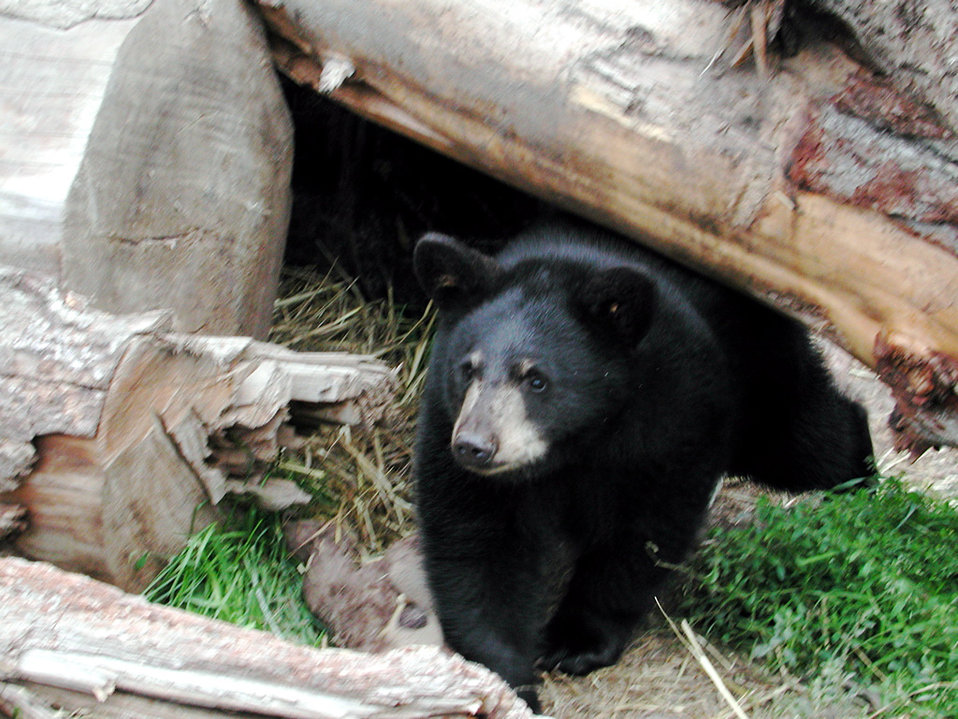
Black Bear.